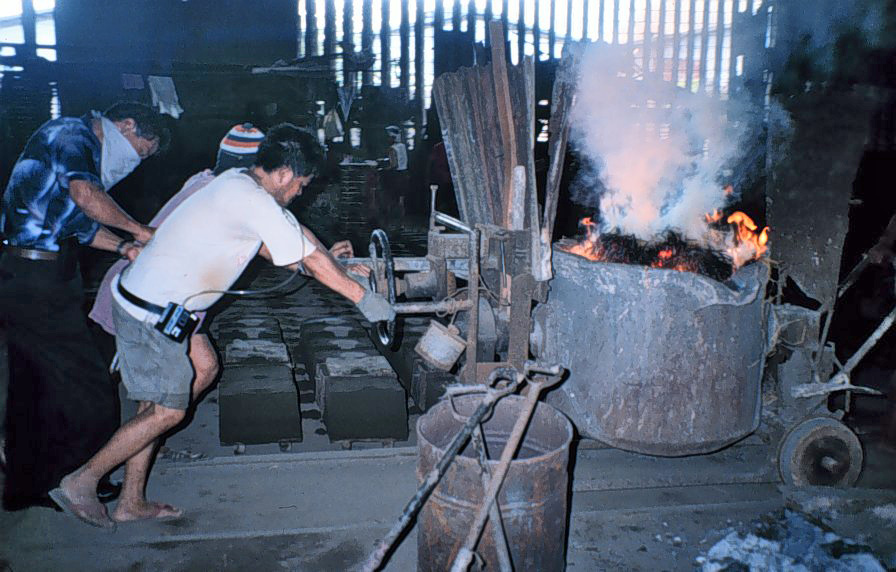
This photograph shows individuals within a foundry factory who took part in a 1998 hands-on industrial hygiene sampling course in Manila, Philippines.